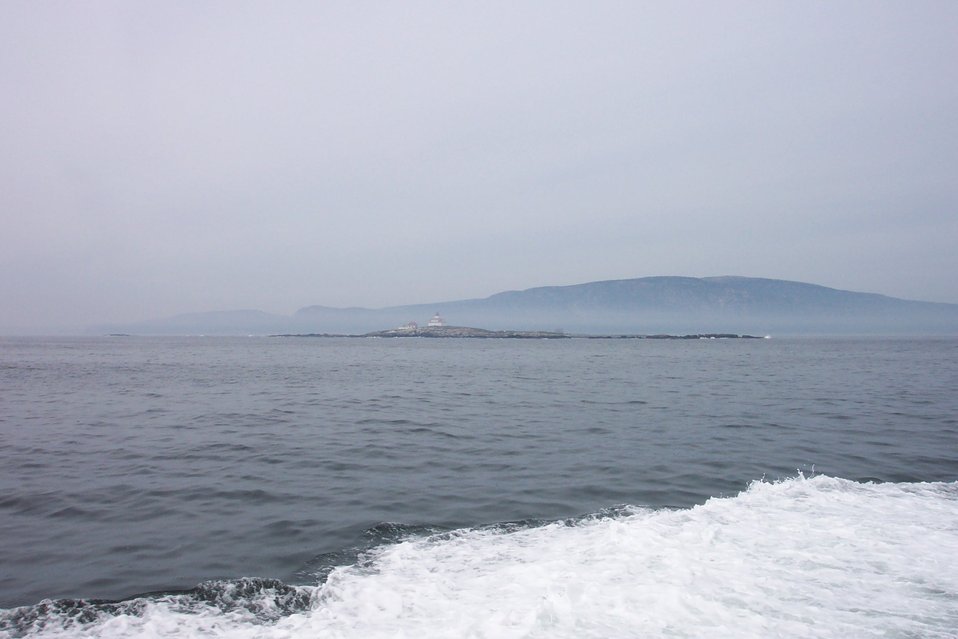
Egg Rock Island Lighthouse and Cadillac Mountain at Acadia National Park. Leaving Bar Harbor on a whale-watching cruise.